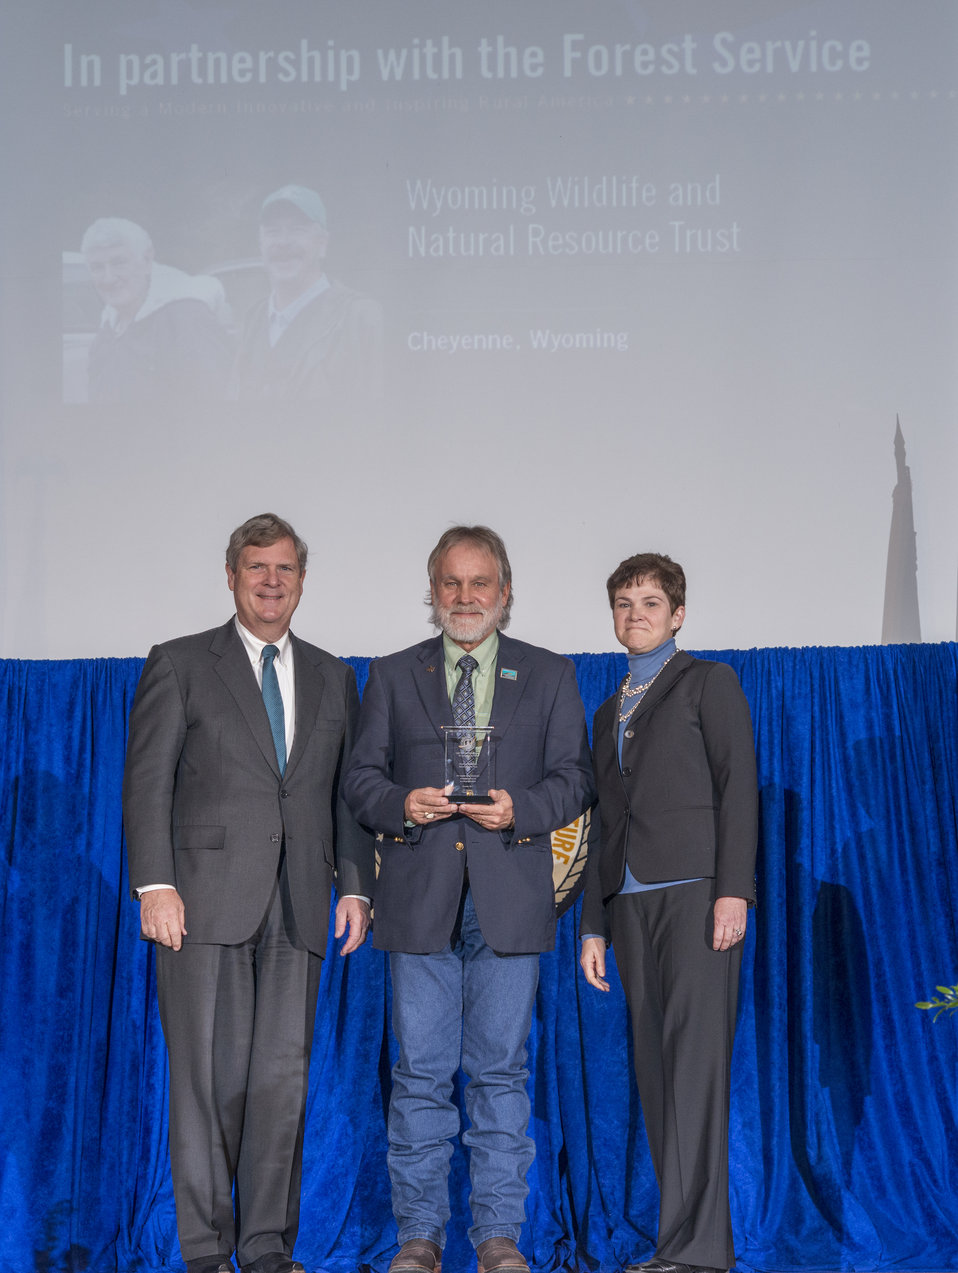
Agriculture Secretary Tom Vilsack and Agriculture Deputy Secretary Krysta Harden present the Secretary’s Honor Award to Wyoming Wildlife and Natural Resource Trust, in Cheyenne, WY Team leader Bob Budd for his collaborative achievements in land stewardship and conservation that helped Wyoming restore healthy landscapes, provide clean and abundant water, and enhance recreation experiences at the 2013 Secretary's Honor Awards in the Jefferson Auditorium at the U.S. Department of Agriculture in Washington, D.C. on Wednesday, Dec. 11, 2013.